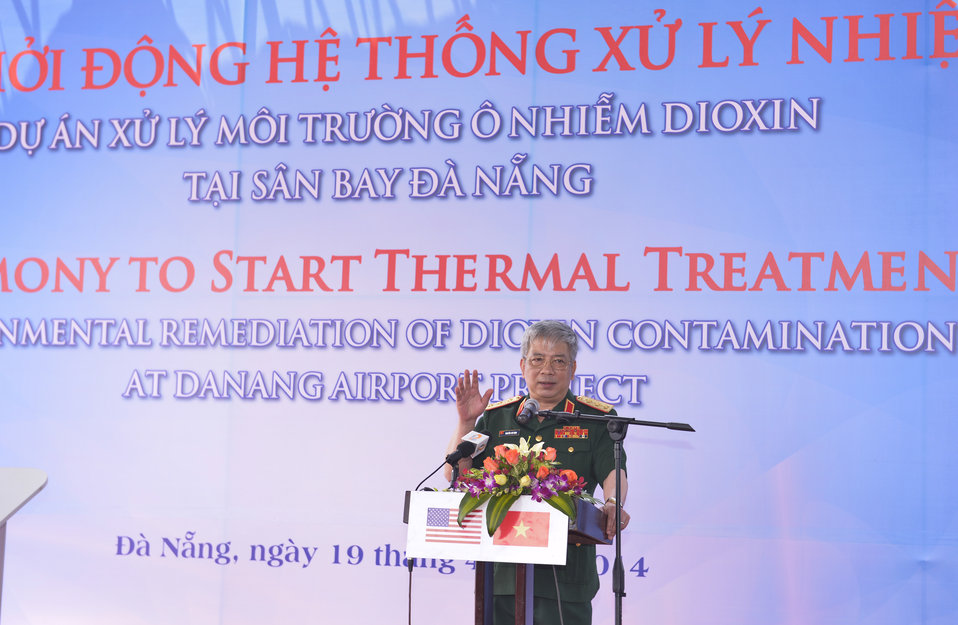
Senior Lieutenant General Nguyen Chi Vinh, Vietnam’s Vice Minister of National Defense, speaks at the ceremony to turn on treatment system at Danang Airport

Danang, April 19, 2014.